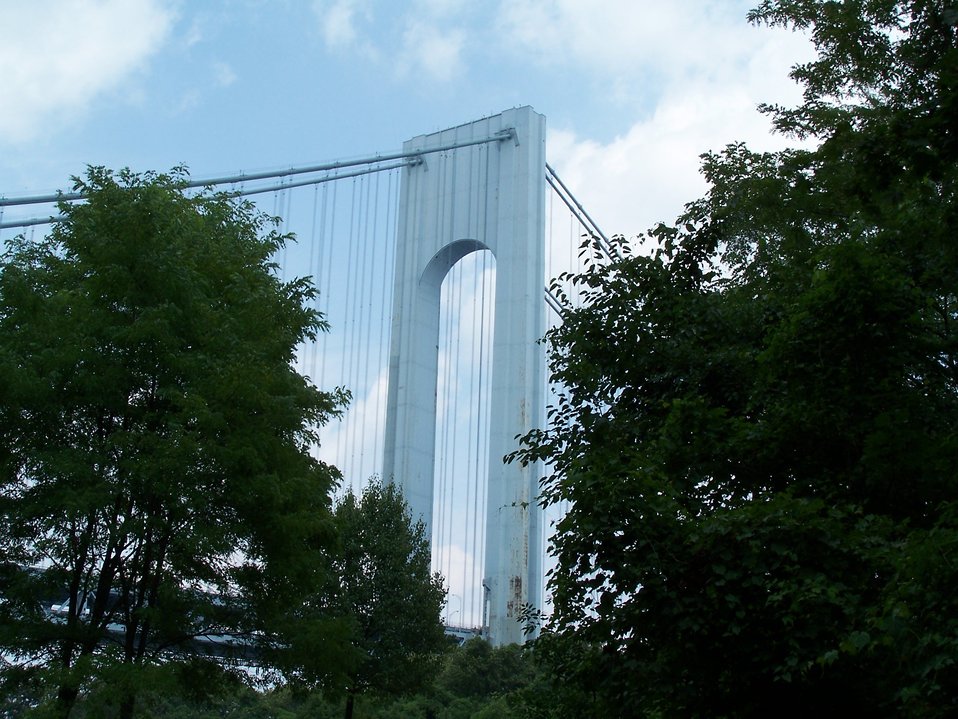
The west pier of the Verrazano-Narrows Bridge at Staten Island.